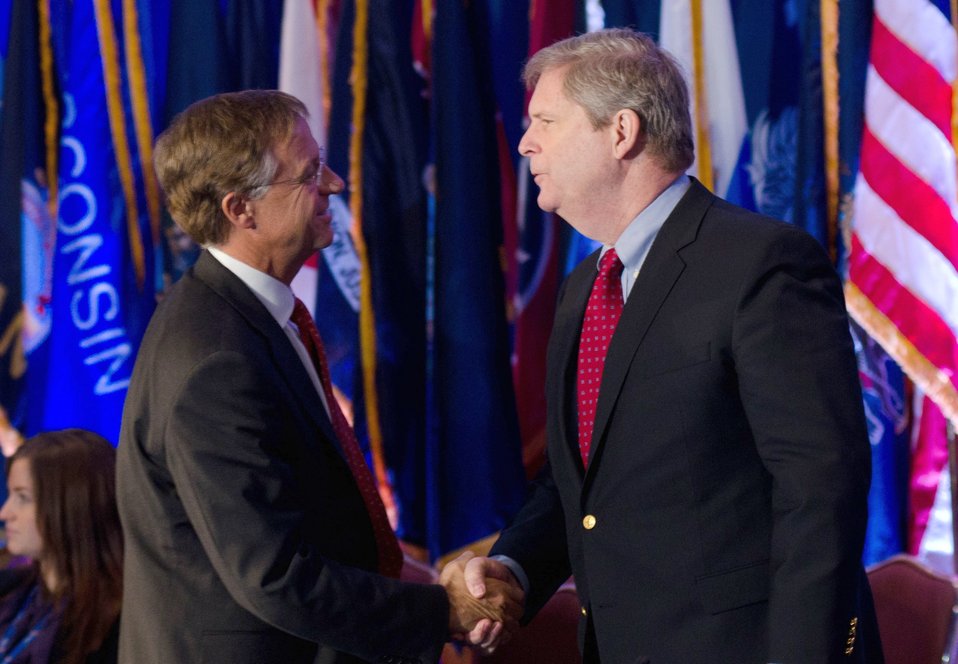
Tennessee - Governor Bill Haslam (left) welcomes Agriculture Secretary Tom Vilsack (right) as guest speaker during the National Governors Association Education, Early Childhood and Workforce Committee meeting in Washington, D.C., on Sunday, February 26, 2012.